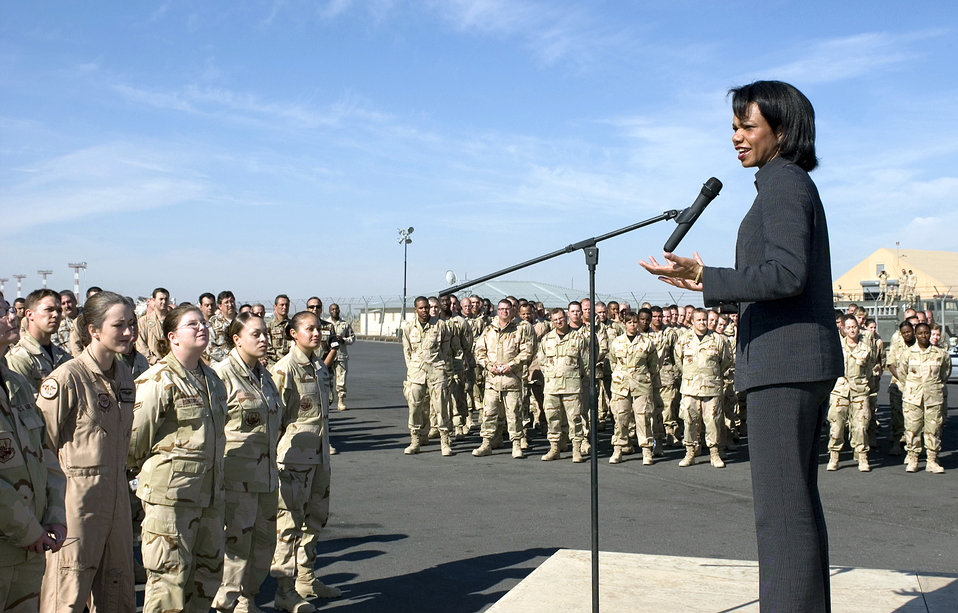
Secretary of State visits Manas, inspires troops

MANAS AIR BASE, Kyrgyzstan -- Secretary of State Condoleezza Rice speaks to Airmen here Oct. 11. Secretary Rice visited with the base briefly on her stop in Kyrgyzstan, the first in a series of countries she was planning to visit in Central Asia.